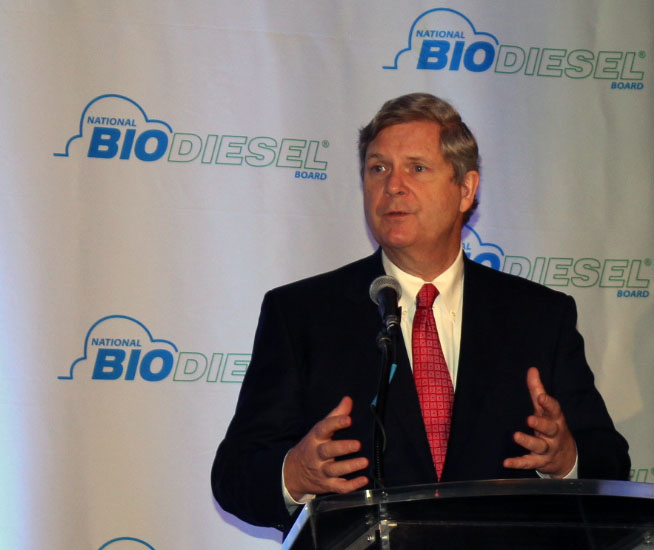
Agriculture Secretary Tom Vilsack makes remarks at the Momentum National Biodiesel Conference in Las Vegas, NV., on February 8, 2013.